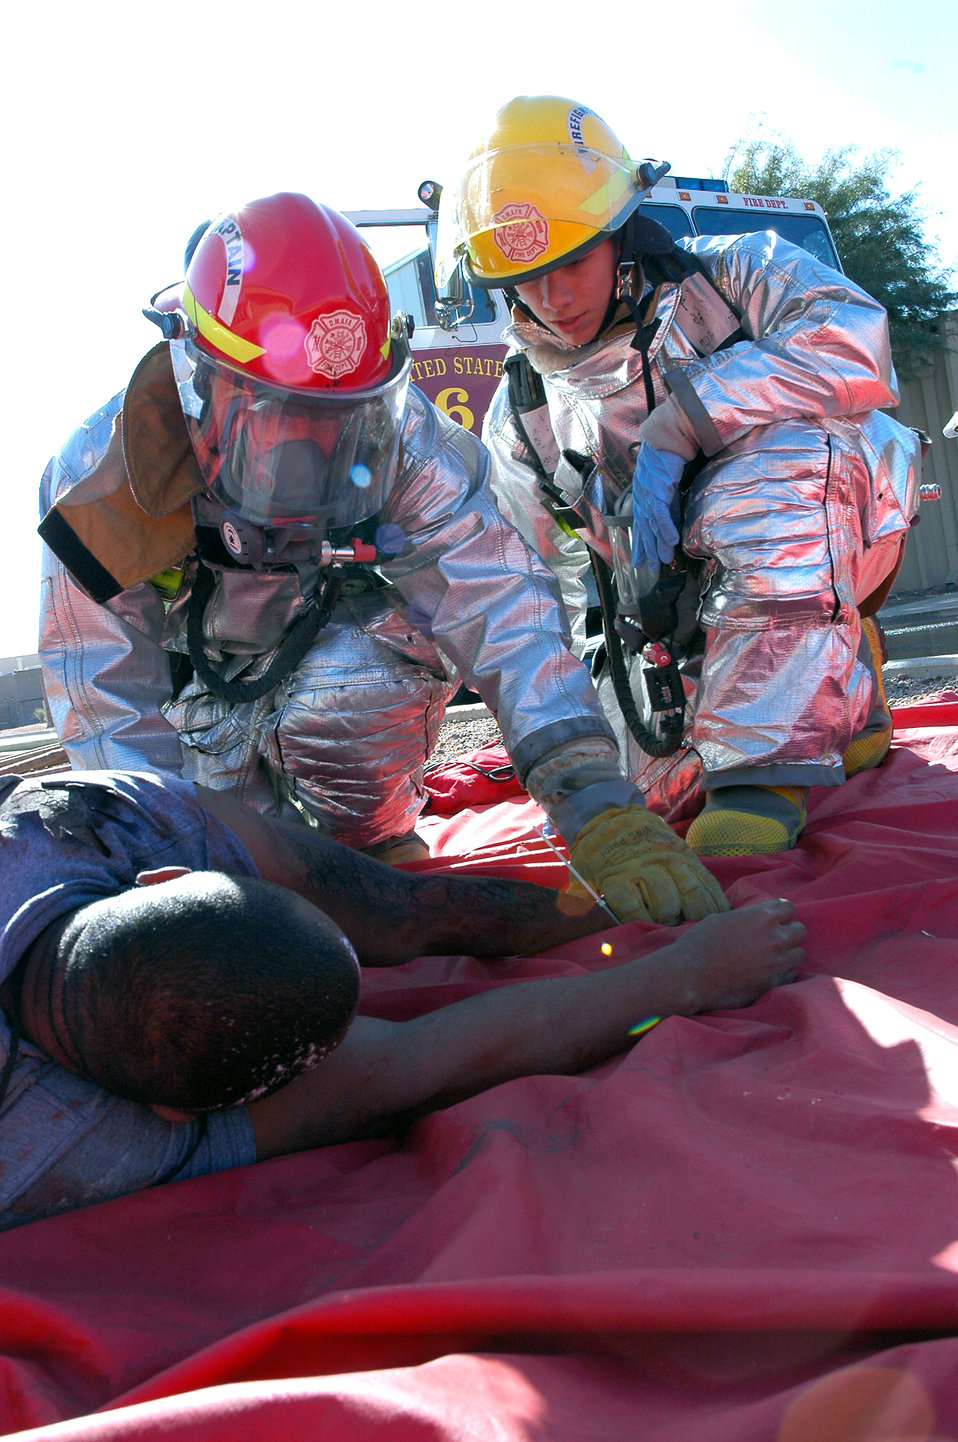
Exercise, exercise, exercise

DAVIS-MONTHAN AIR FORCE BASE, Ariz. (AFPN) -- Jason Walker (left) and Airman 1st Class Anthony Stanchfield help a